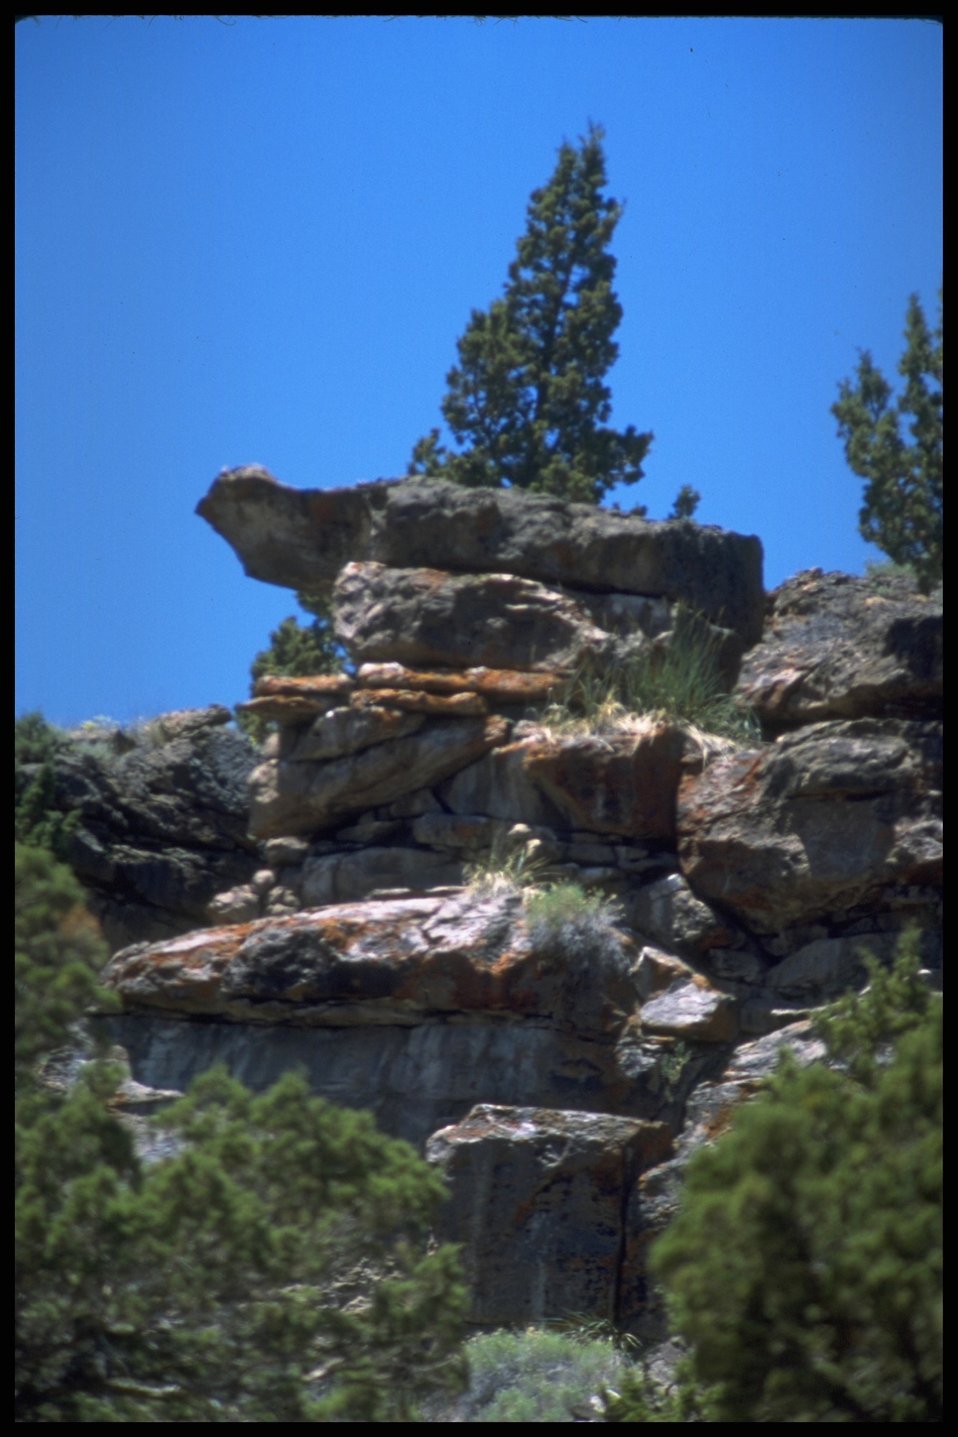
Interesting rock formation, Lakeview District.